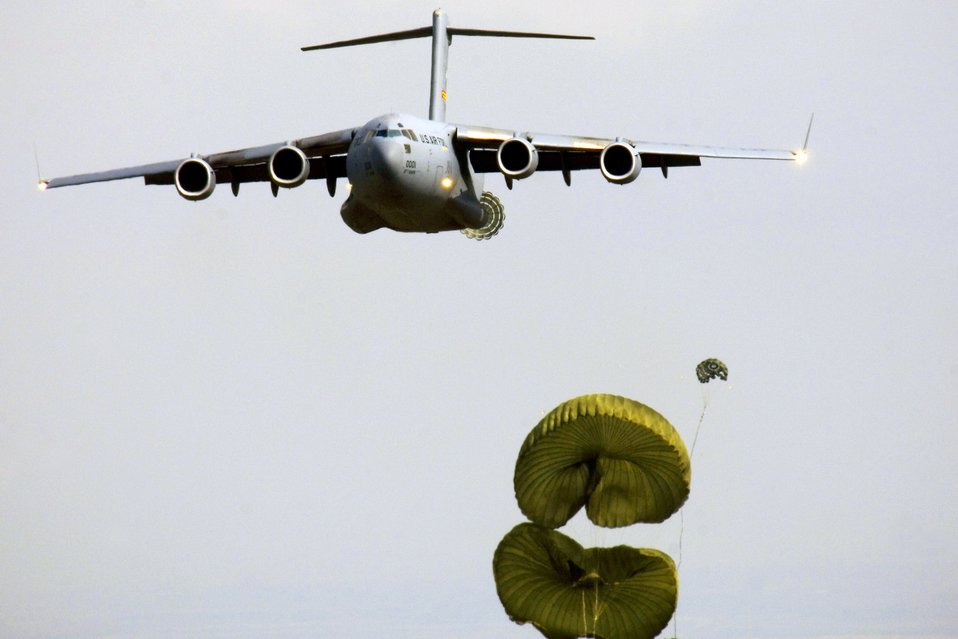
C-17 loadmaster students learn from masters of the craft

A C-17 Globemaster III drops a cargo load during a recent training mission at Altus Air Force Base, Okla. Student loadmasters log 25 to 30 hours of flight training time in C-17s from the 58th Airlift Squadron.